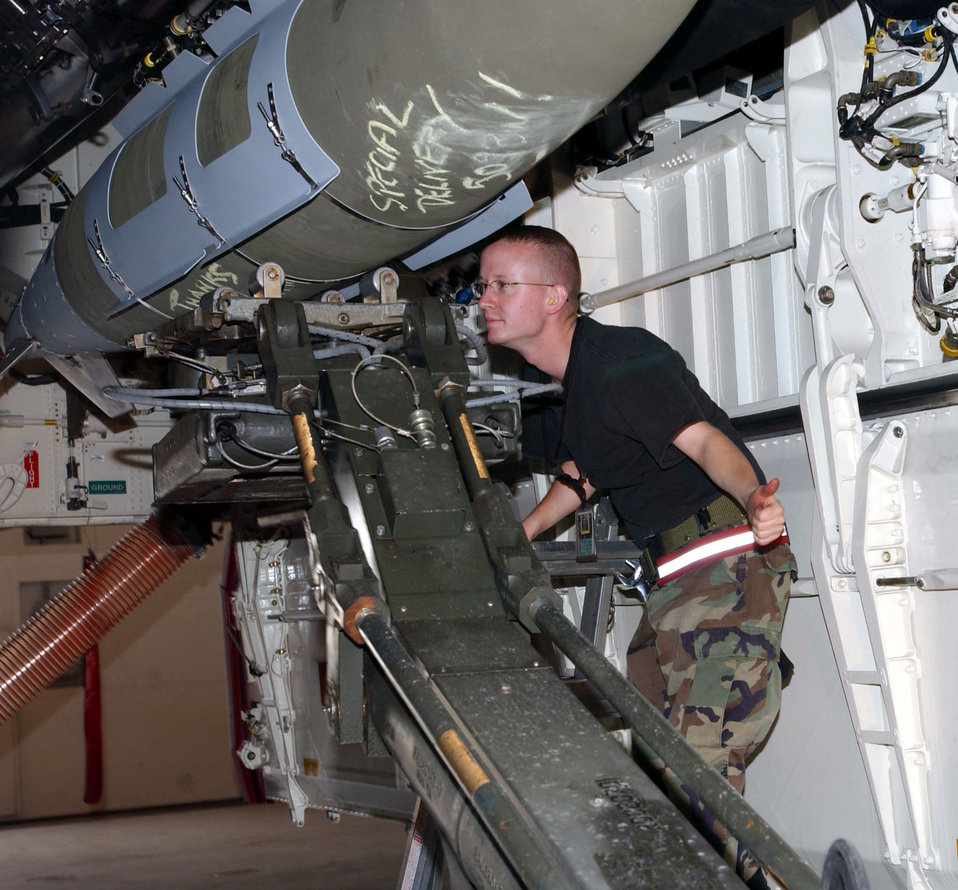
Cox

WHITEMAN AIR FORCE BASE, Mo. -- Senior Airman Nicolas Cox calls the shots as a Joint Direct Attack Munition is offloaded from the bomb bay of a B-2 Spirit bomber. The bomber was reloaded with a different configuration to fly a combat sortie in support of Operation Iraqi Freedom. Airman Cox is a weapons specialist assigned to the 509th Aircraft Maintenance Squadron.